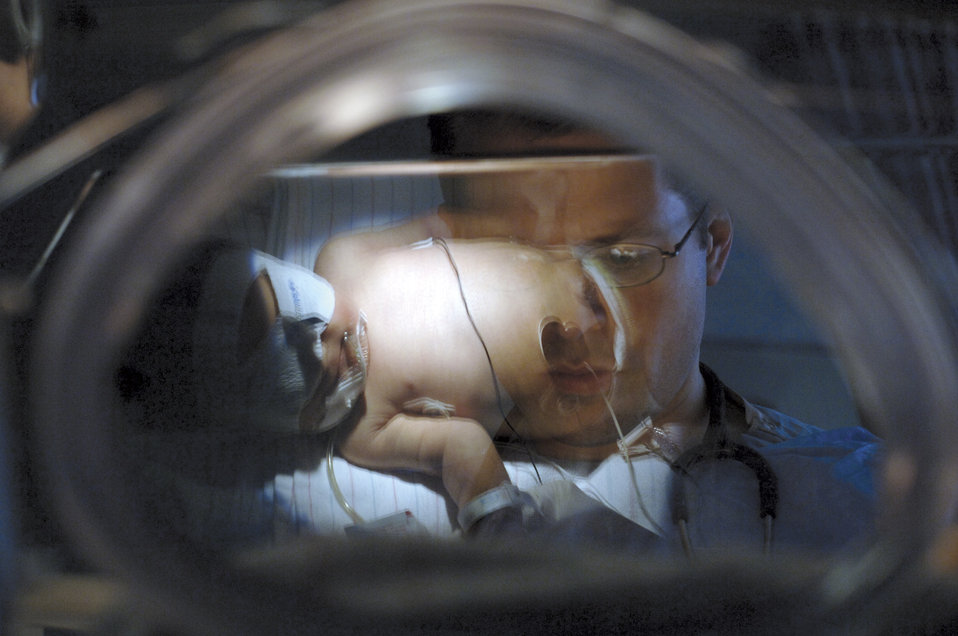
Hospital wing and prayer

Army Dr. (Capt.) Preston Omer reaches into an isolette, a Plexiglass crib, to draw blood from one of his tiny patients at Wilford Hall Medical Center, Lackland Air Force Base, Texas.